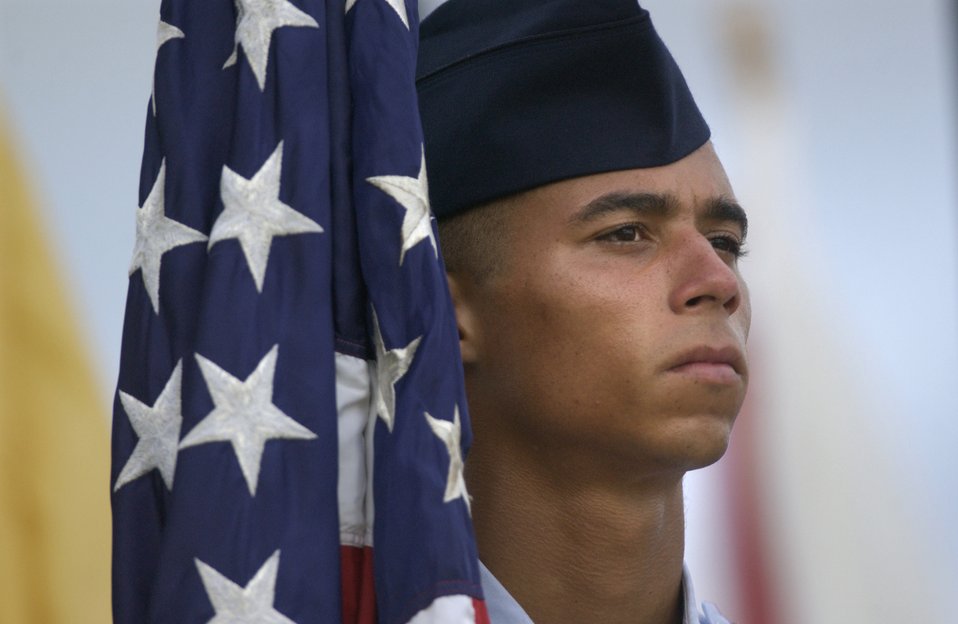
Tomorrow's leaders

LACKLAND AIR FORCE BASE, Texas -- Airman Herbert Hall prepares to participate in a Basic Military Training graduation parade here. The parade of 15 squadrons marked the end of the six-week training period for about 750 of the Air Force's newest Airmen.